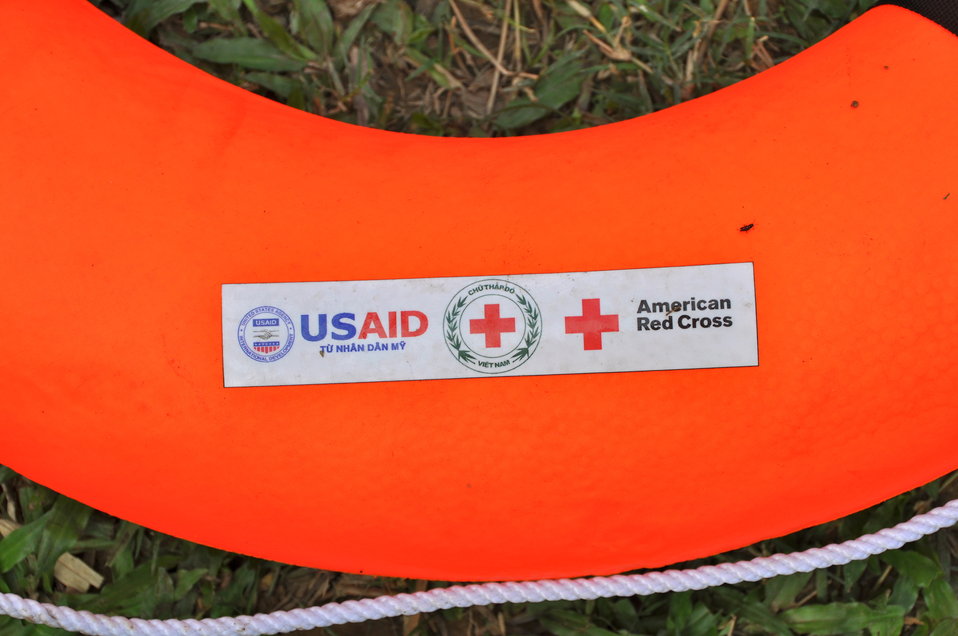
USAID, Red Cross Support Disaster Response Drill in Duy Hoa Commune, Quang Nam Province

Duy Hoa Commune, Quang Nam Province
December 5, 2012